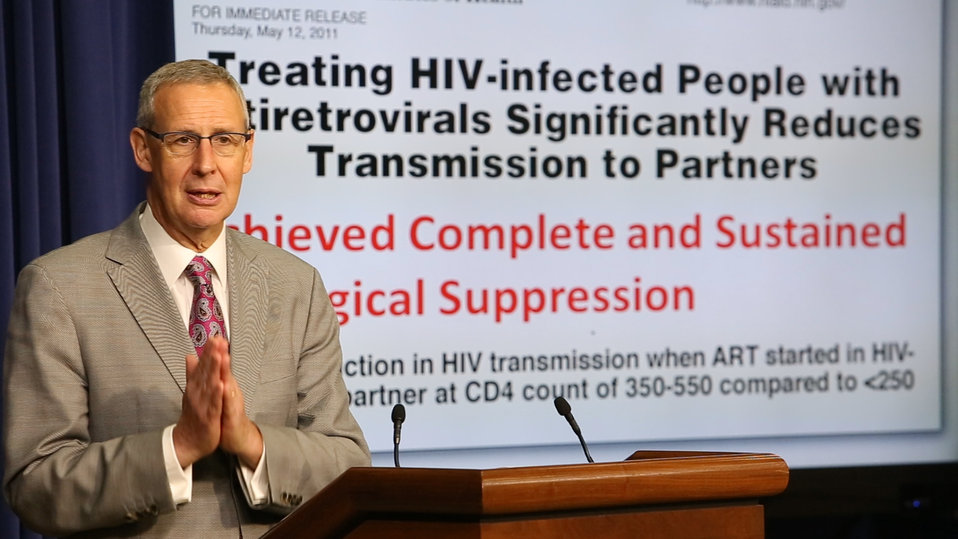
MVI 0180.MOV.Still002